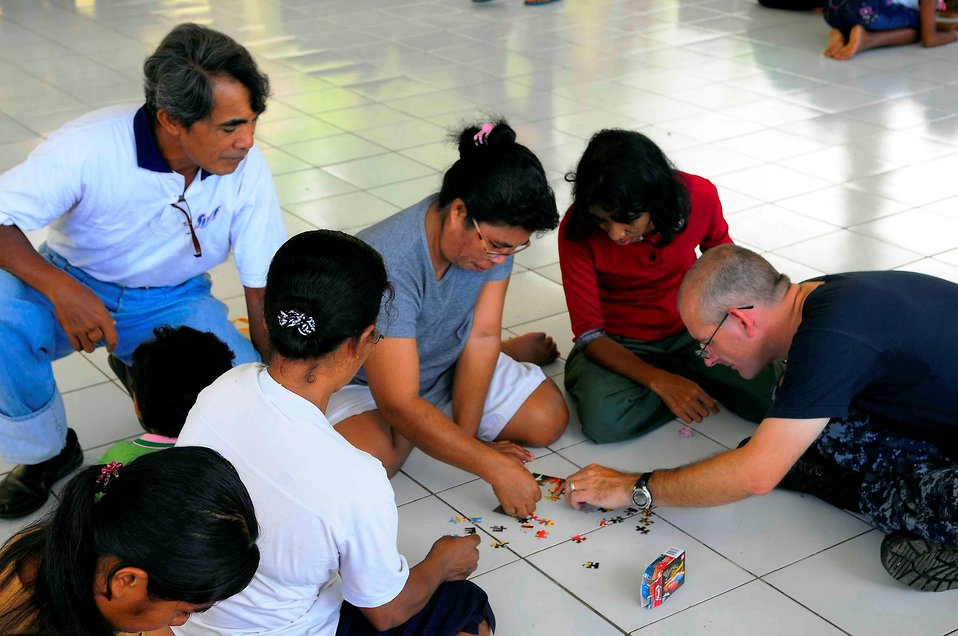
Navy Chaplain Lt. Derrick Horne pieces together a puzzle with care providers at a community service event at the Rumah Sejahtera Bagi Anak Orphanage, in support of Pacific Partnership 2010 in Tobelo, Indonesia, on July 14, 2010. Pacific Partnership 2010 is the fifth in a series of annual U.S. Pacific Fleet endeavors conducted in Indonesia as a disaster relief exercise to strengthen regional partnerships.